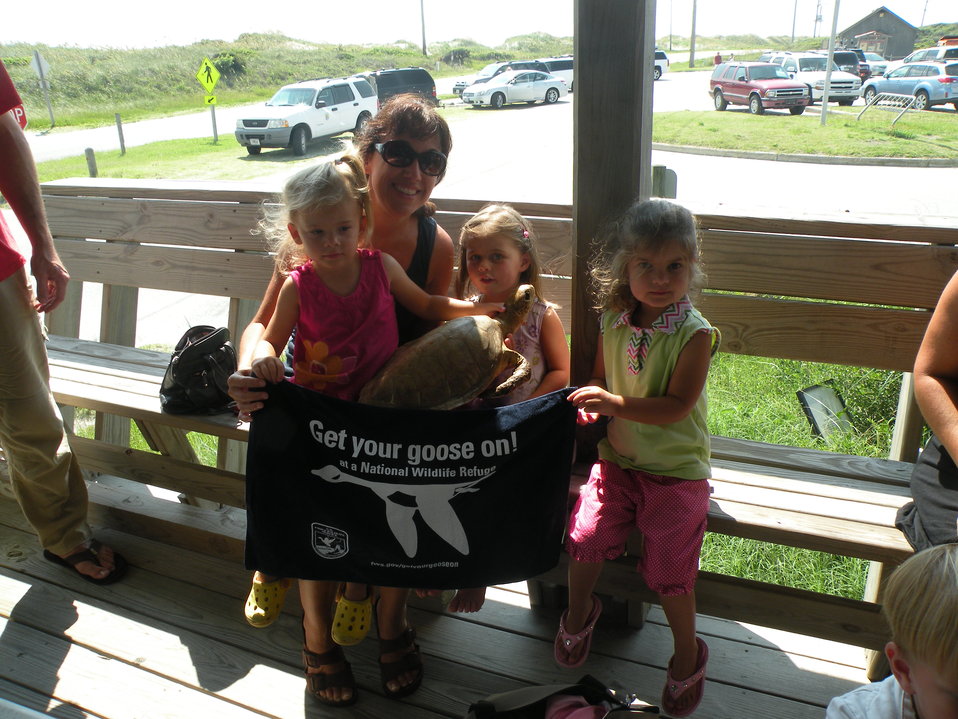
Get Your Goose On!

Outer Banks Mommy and Me group enjoy learning about turtles and Get there Goose on!

Cindy Heffley/USFWS